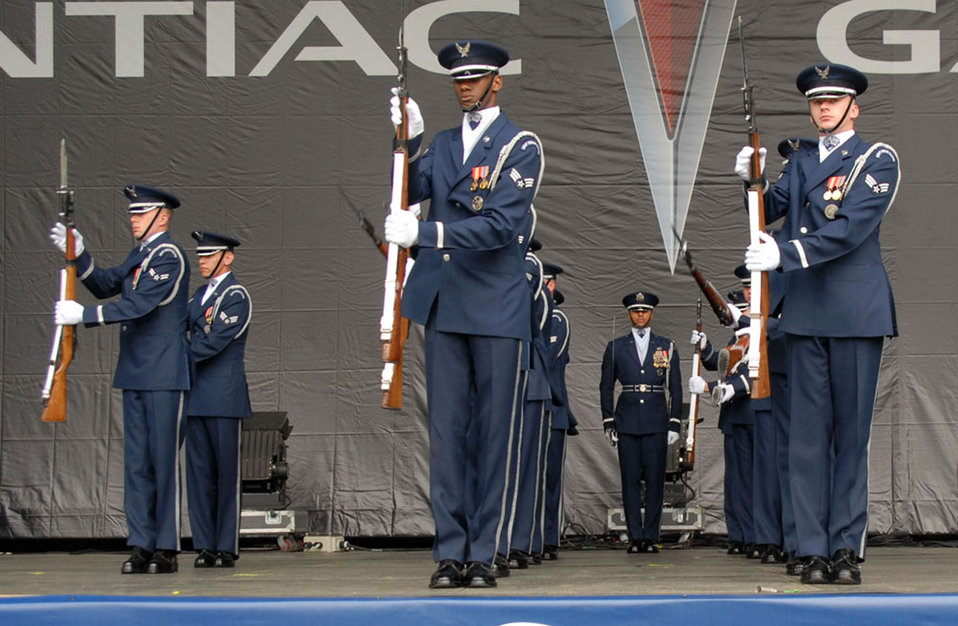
Honor Guard Drill Team keeping sharp for Air Force

Air Force Honor Guard Drill Team members perform at the opening ceremonies for the NCAA Final Four Games March 31 at Centennial Olympic Park in Atlanta. The drill team recently returned from their latest 11-day tour around the U.S., that included visits to Atlanta; Hill Air Force Base, Utah; and Salt Lake City.